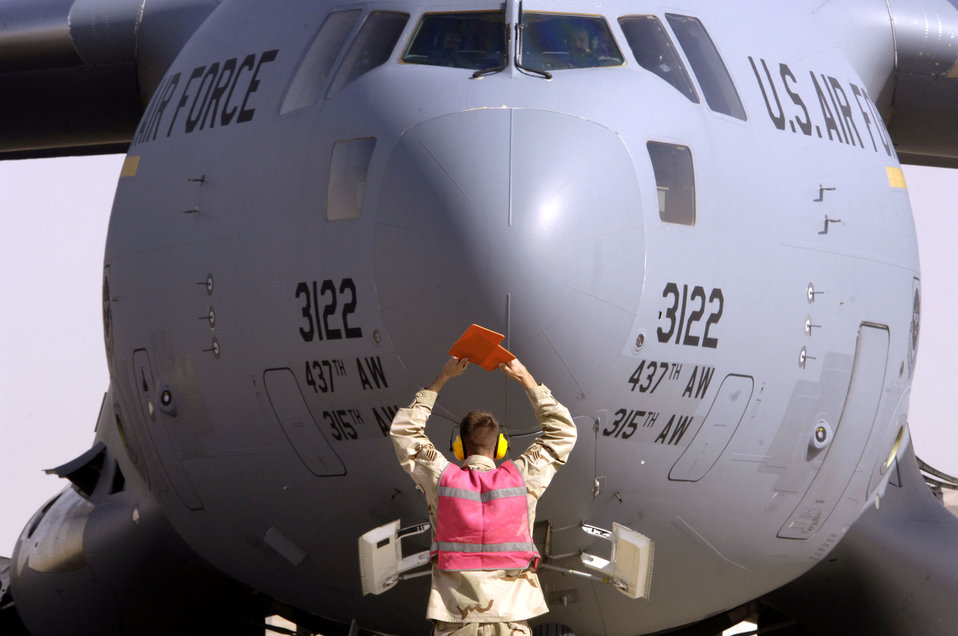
C-17 mission

A crew chief marshals a C-17 Globemaster III into position on the parking ramp at Balad Air Base, Iraq, on July 12. The aircraft had just returned from a mission in support of Operation Iraqi Freedom.